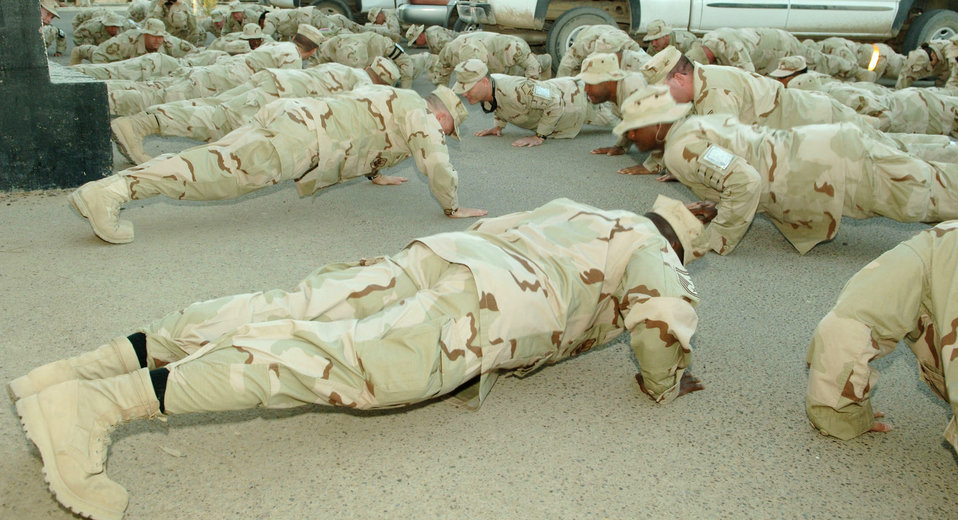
Push-up plan meets new fitness initiative

Airmen from the 332nd Expeditionary Communications Squadron at Balad Air Base, Iraq, perform push-ups in front of their building. The squadron plans to do 332,000 push-ups collectively before their deployment here ends. Squadron Airmen call it the